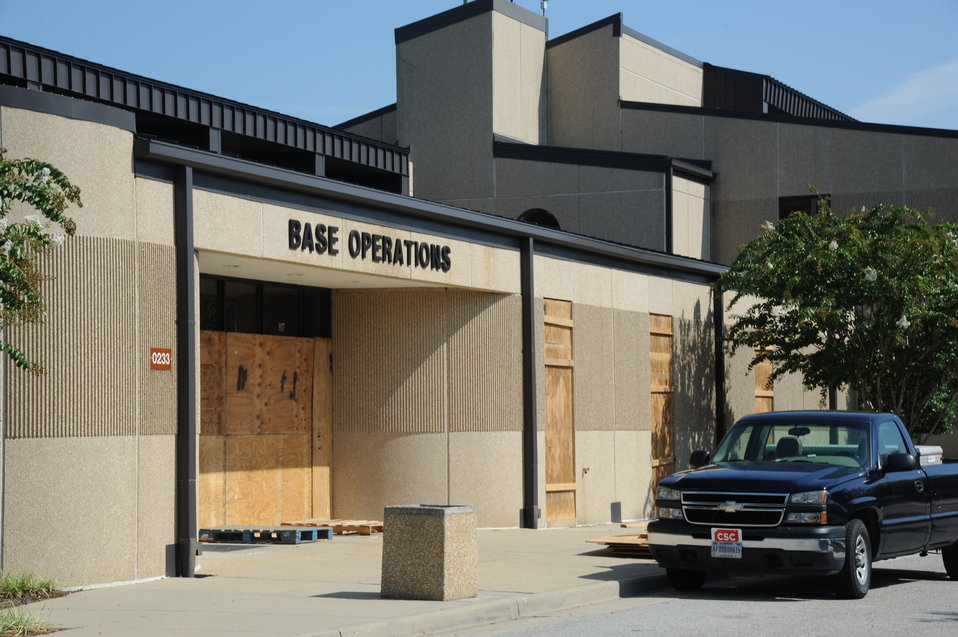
Keesler takes preventative measures to prepare for Isaac

8/28/2012 - Base Operations Center is “hardened” awaiting onset of possible hurricane conditions as Keesler Air Force Base, Miss. Personnel are taking preventative measures Aug. 27, 2012, to prepare and protect themselves and Keesler's assets as the base commander has declared HURCON 3, meaning destructive winds of 58 mph or greater are expected as Isaac approaches.